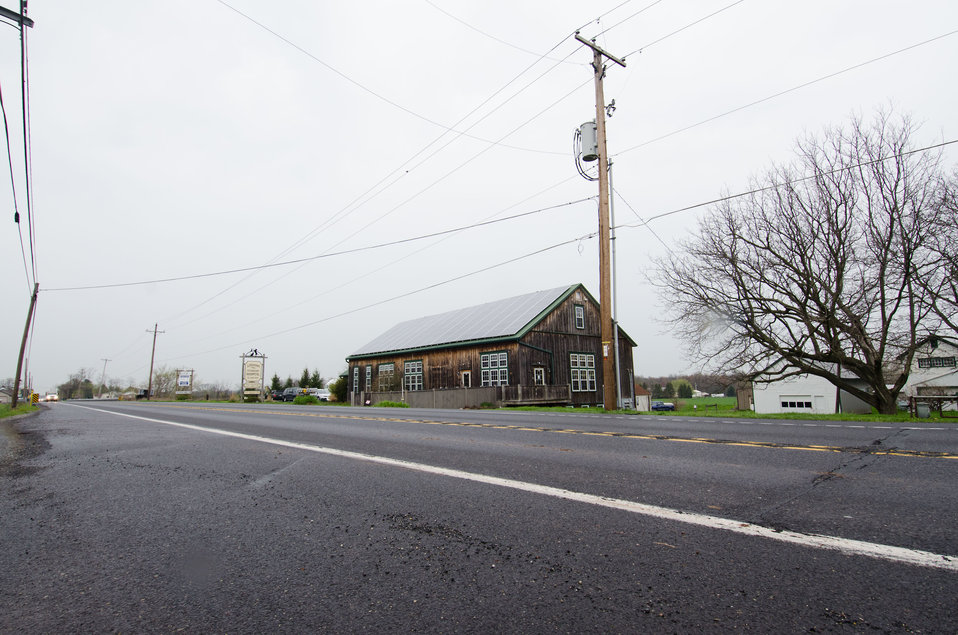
A three-phase transformer (on the pole) allows solar electricity from the 105 solar panels on the roof of the Littlestown Veterinary Hospital in Littlestown, PA, to go into the local power grid on Tuesday, April 19, 2011. The Littlestown Veterinary Hospital in Littlestown, PA, received a grant from the U. S. Department of Agriculture, Rural Development under the Rural Energy for America Program (REAP) to have solar panels installed to help reduce their carbon footprint and to have cost effective electric power for the hospital. REAP provides grants for energy audits and renewable energy development assistance. The program also provides funds to agricultural producers and rural small business to purchase and install renewable energy systems and make energy efficiency improvements. The expected cost savings using solar power for the hospital’s electrical needs is expected to reduce the facility’s operating expenses by 30%-40%.